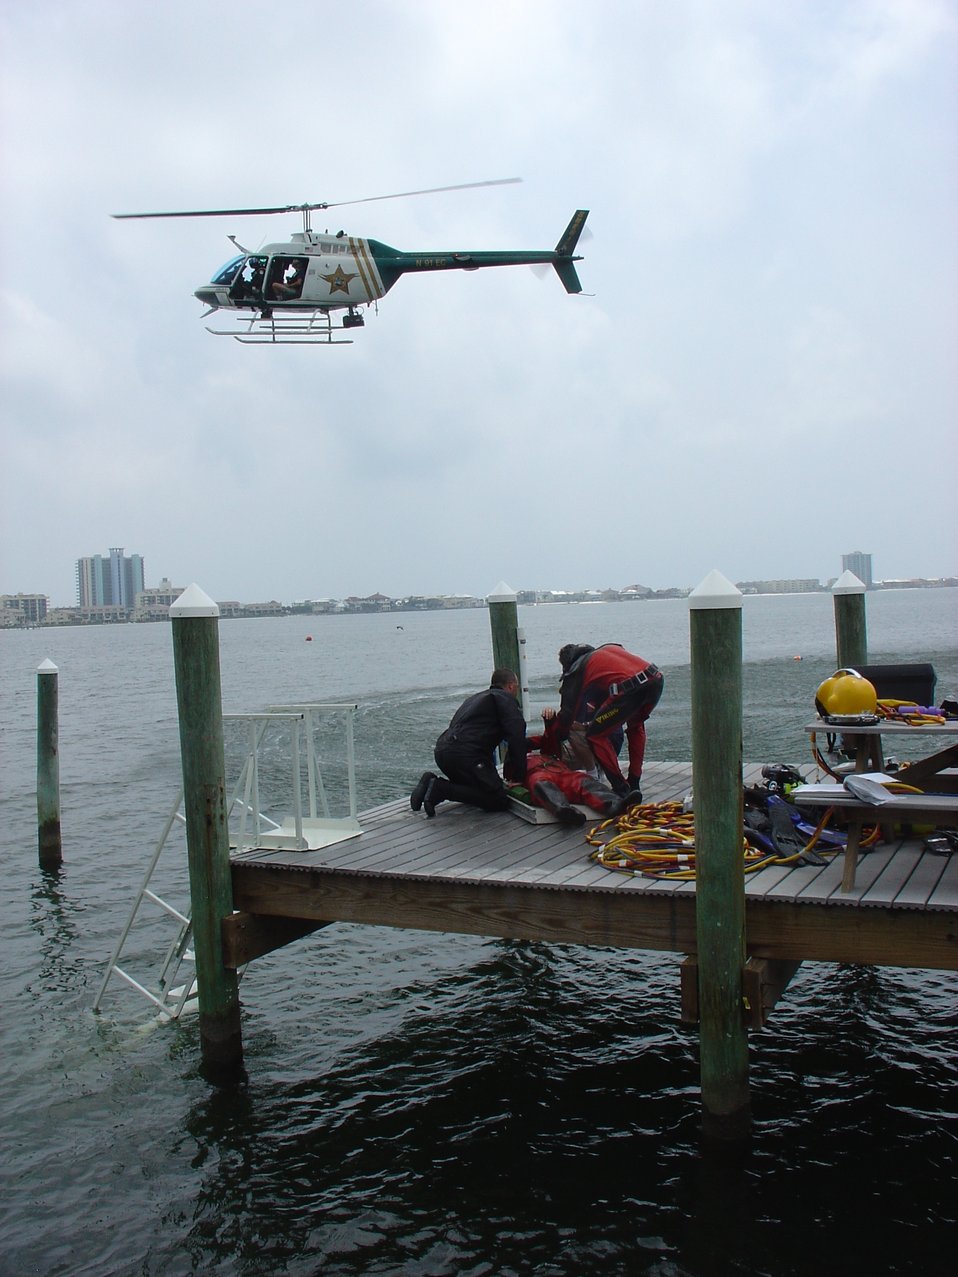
May 2012, Practicing air rescue

At this dive training in Gulf Breeze, Florida, divers learn basics of safety and rescue, as well as practice projects using the scientific method underwater in various diving modes including SCUBA, tethered SCUBA, and surface supplied air.